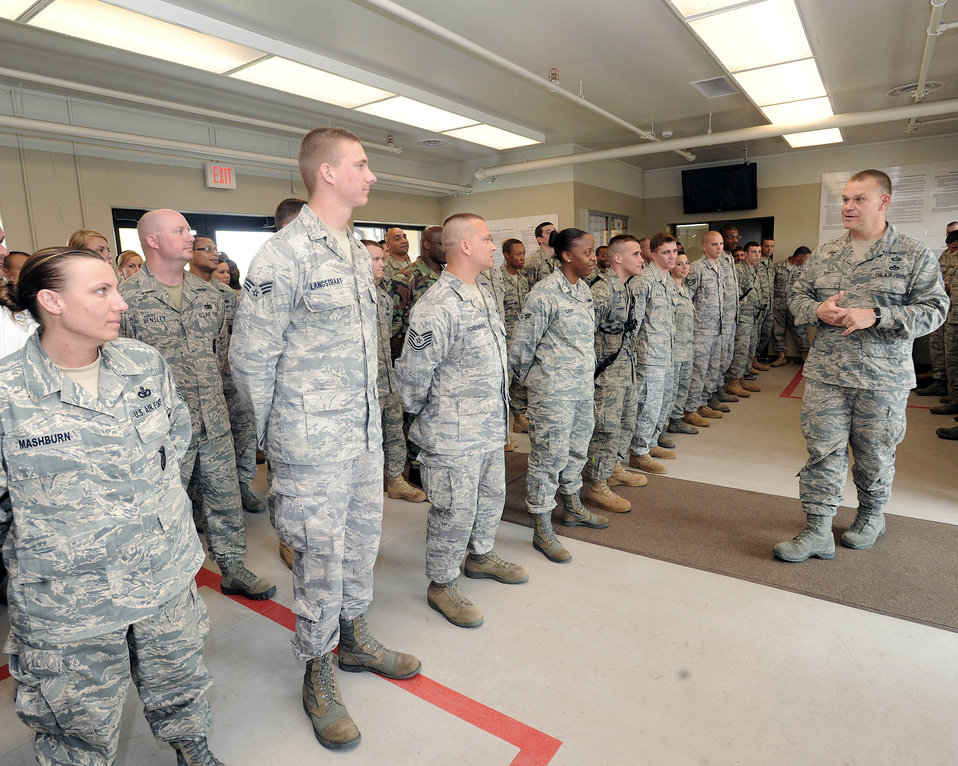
Chief master sergeant of the Air Force visits Grand Forks AFB

Chief Master Sgt. of the Air Force James A. Roy visits with the 319th Security Forces Squadron July 15, 2010 at Grand Forks Air Force Base, N.D.